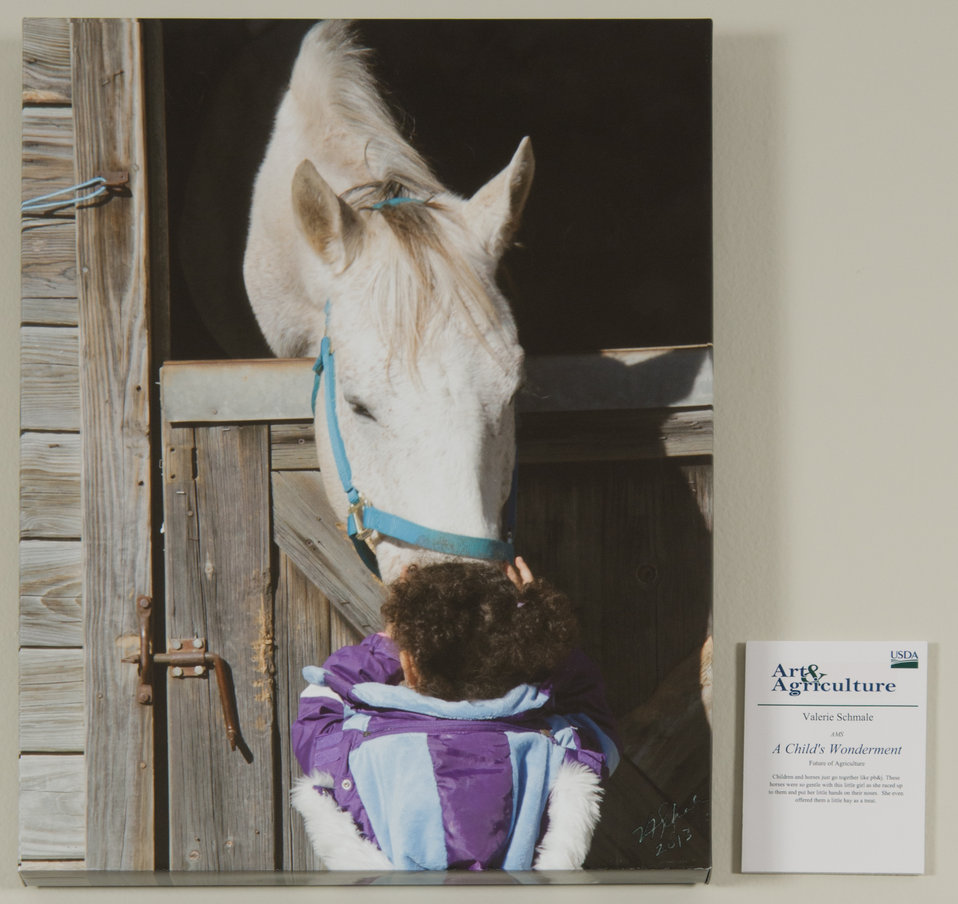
Online Viewer's Choice entries of the 2013 Art & Agriculture, Tuesday, July 9, 2013, in the South Building, Washington, D.C. Themes were expressed by employees from across the department and the contest was open to full-time and part-time USDA employees. Winning artwork will be displayed till the end of the year. U.S. Artistic expression is a creative outlet that is vital for an individual to grow and develop.